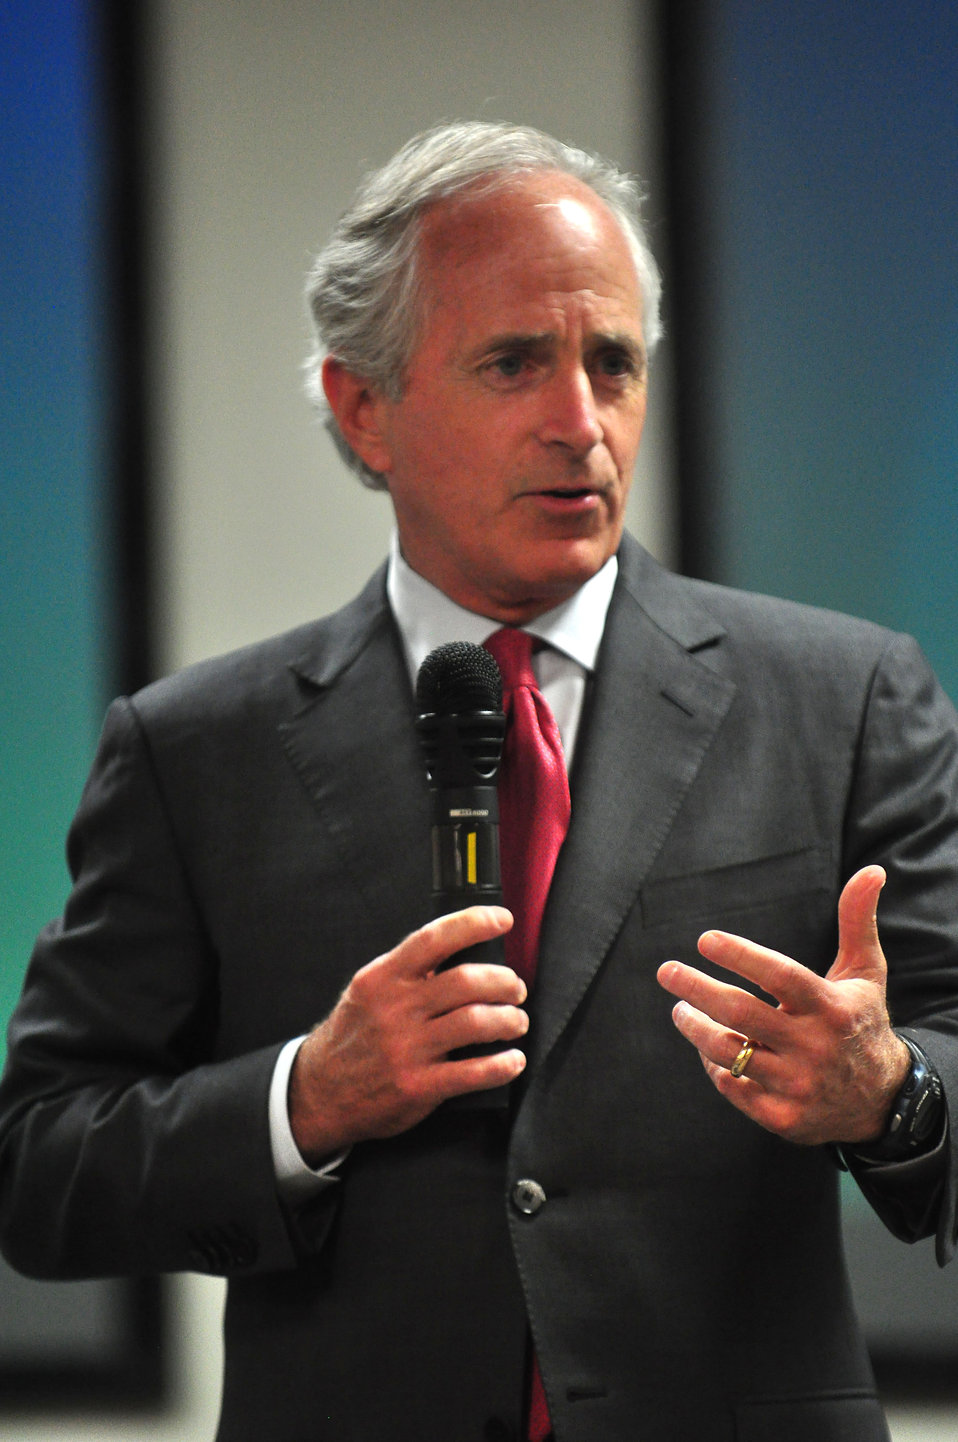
U.S. Senator Bob Corker Tennessee Valley Corridor Summit Oak Ridge

13-062 DOE photo Lynn Freeny 5-29-2013 Oak Ridge Tennessee